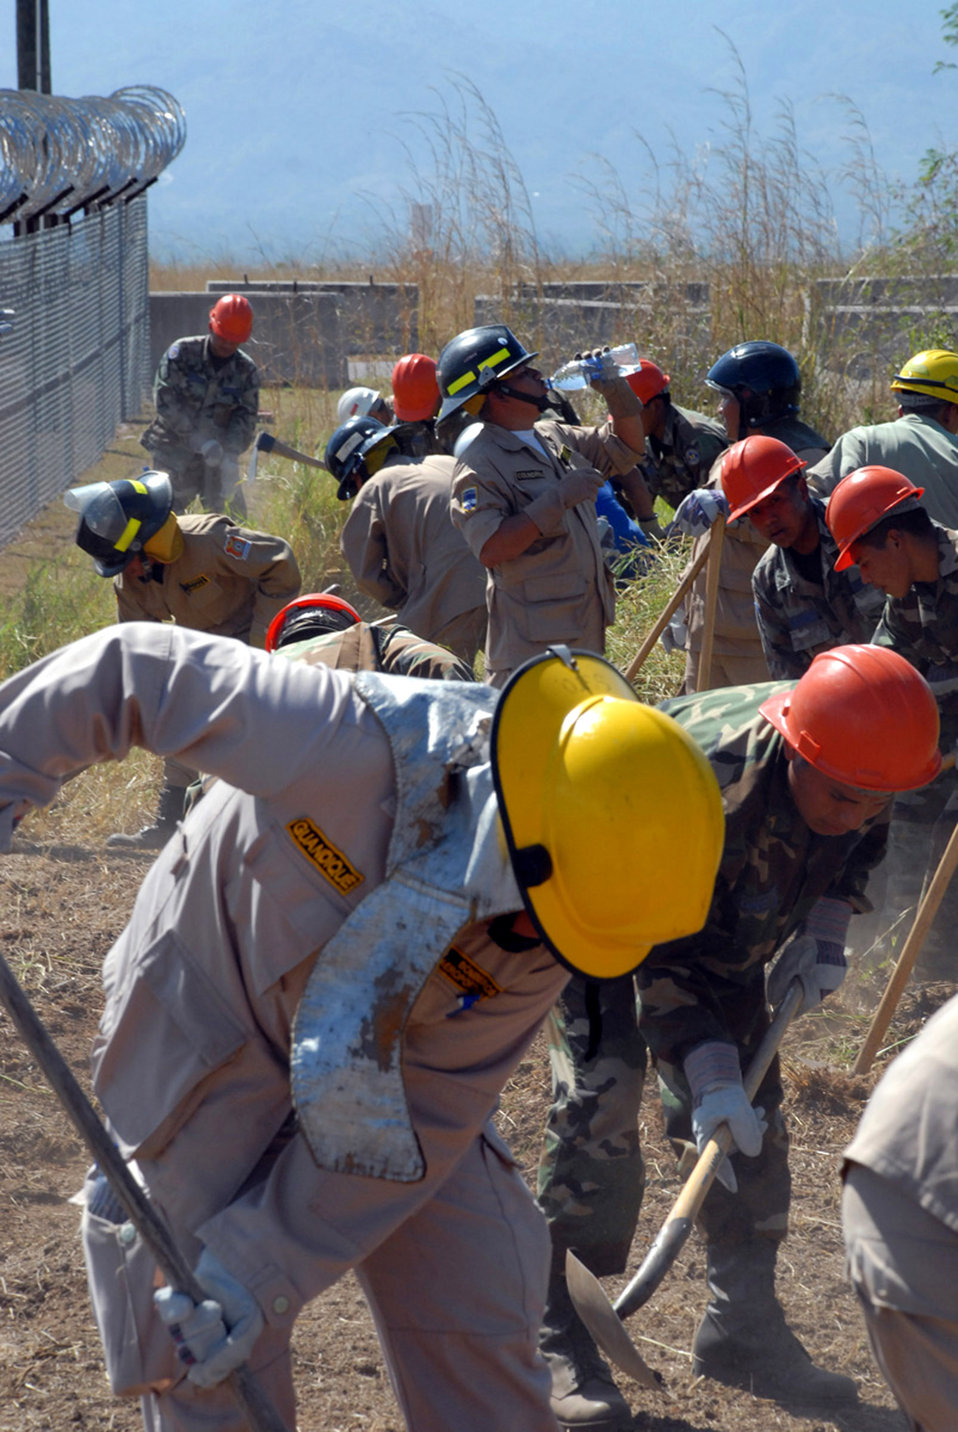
Firefighters exchange knowledge, experience

Honduran military and civilian firefighters dig a fire break at Soto Cano Air Base, Honduras. The firefighters are participating in a Joint Task Force-Bravo-sponsored firefighting subject matter expert exchange. During the exchange, a learning exposition for U.S. and Honduran firefighters, a great level of importance is placed on land navigation and fighting wildfires.